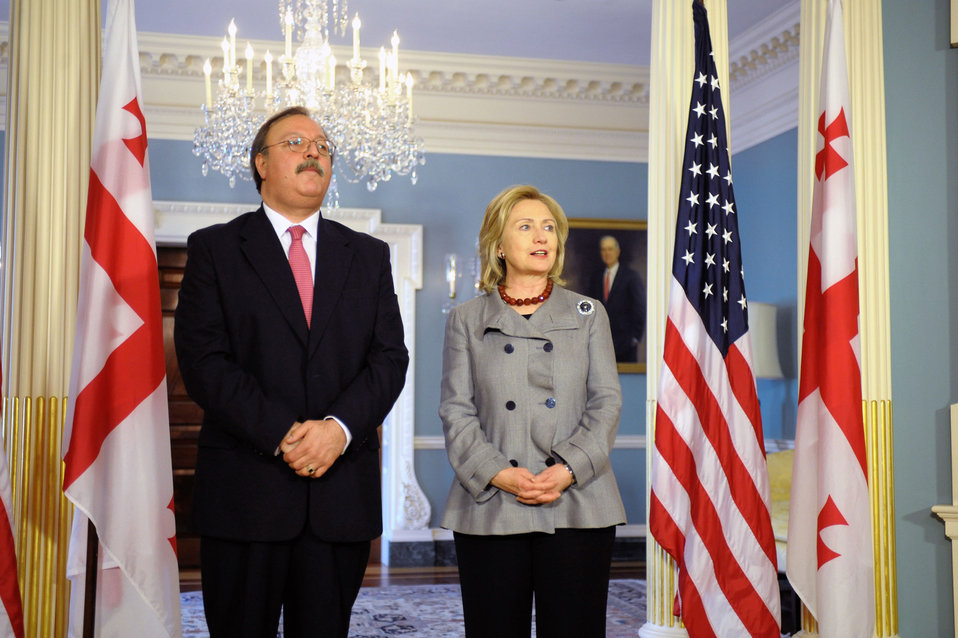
Secretary Clinton Holds a Bilateral Meeting With Georgian Foreign Minister Vashadze

U.S. Secretary of State Hillary Rodham Clinton holds a bilateral meeting with Georgian Foreign Minister Grigol Vashadze at the U.S. Department of State in Washington, D.C., on February 17, 2011.